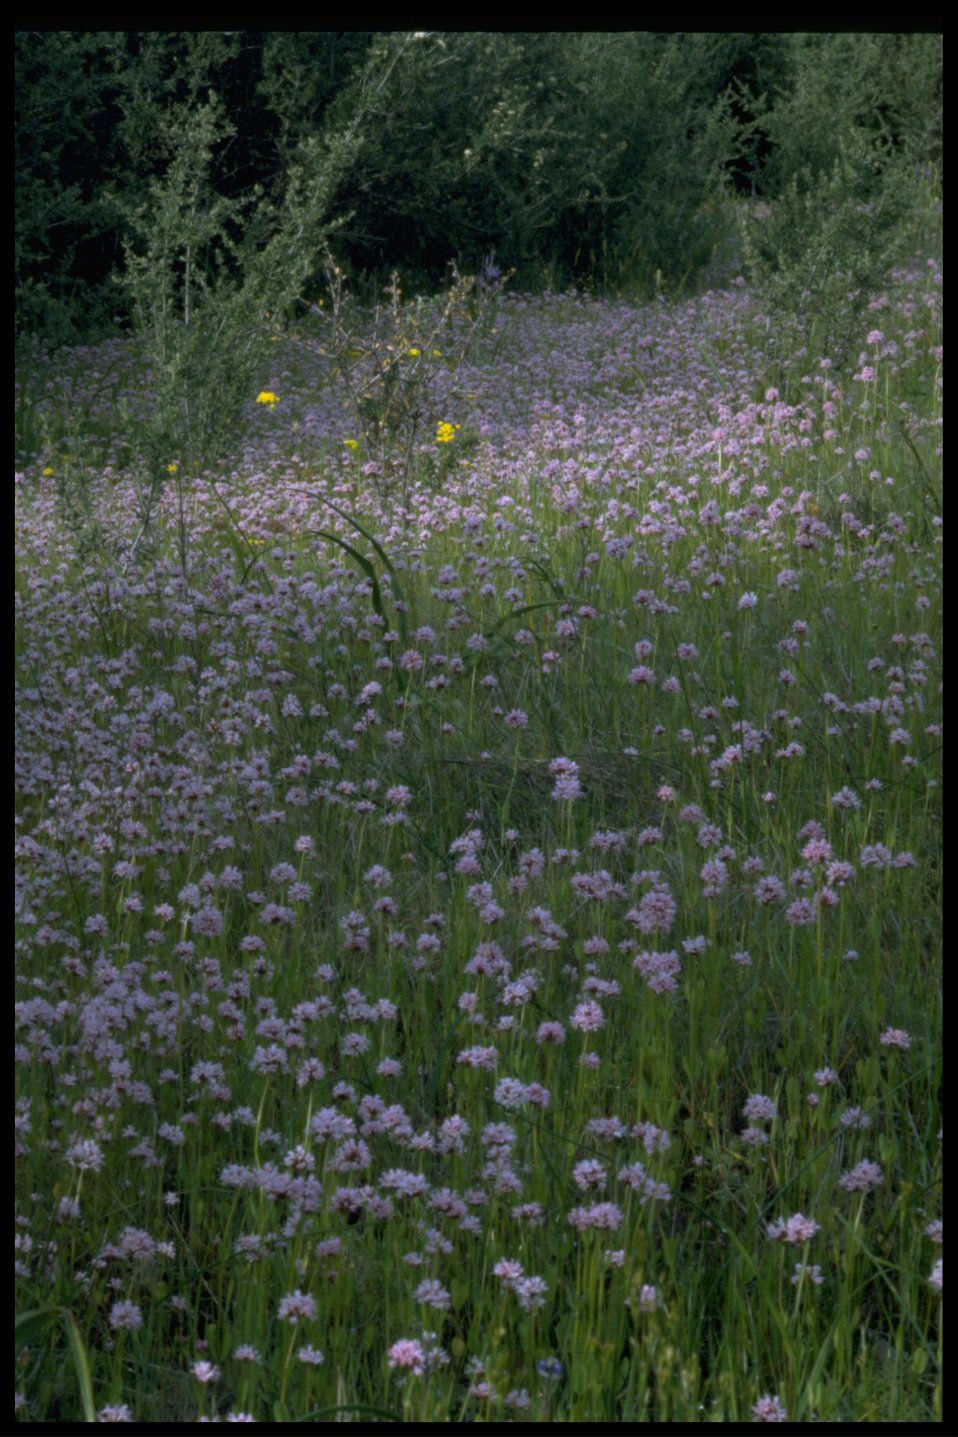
Farshot of Quercus garryana with Phorodendron vilosum, Camassia Quamash, Plectritis congesta, and Ranunculus occidentalis.